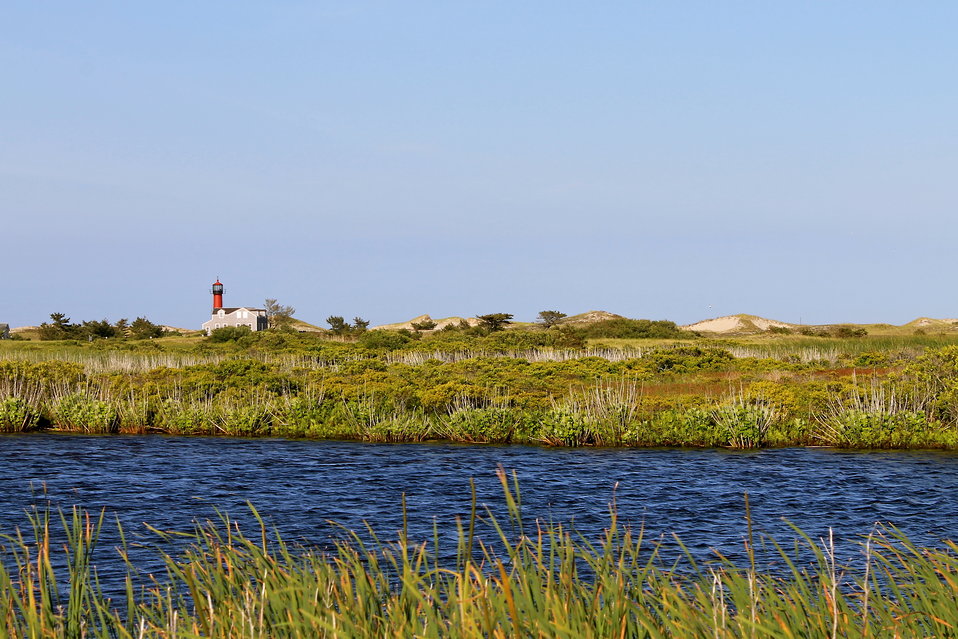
Monomoy light at a distance

Monomoy National Wildlife Refuge, MA.